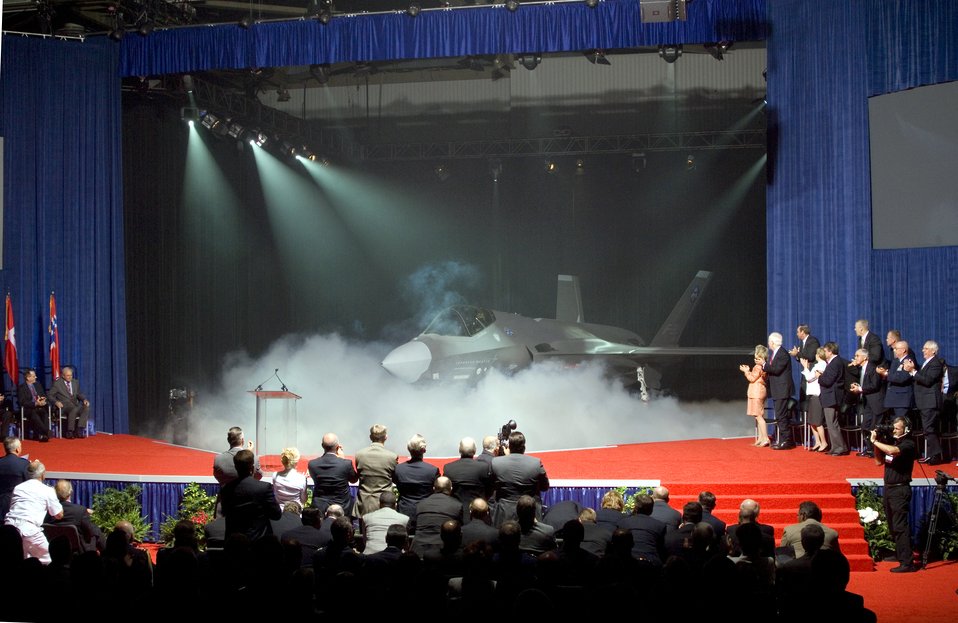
Lightning II makes its debut

The Lockheed Martin F-35 Lightning II is presented for the first time at the inauguration ceremony at the Lockheed Martin plant in Fort Worth, Texas, on July 7. The Lightning II is a 5th-generation, supersonic stealth fighter designed to replace a wide range of existing aircraft, including the AV-8B Harrier, A-10 Thunderbolt II, F-16 Fighting Falcon, F/A-18 Hornet and Royal Air Force Harrier GR-7 and Sea Harriers.